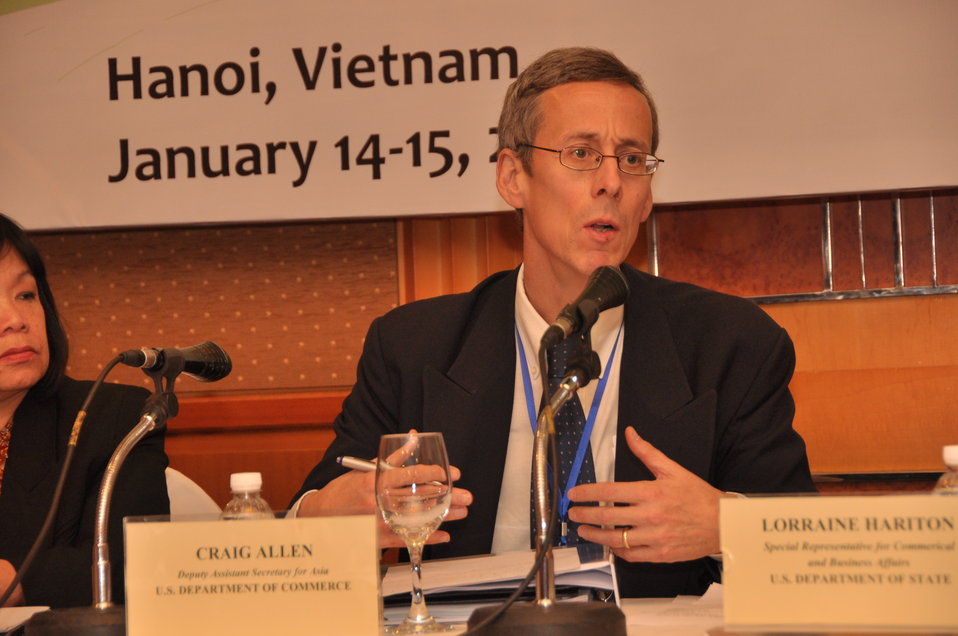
Mr. Craig Allen, Deputy Assistant Secretary for Asia of the U.S. Department of Commerce, speaks at a press conference at the LMI Infrastructure Best Practices Exchange

January 14, 2013